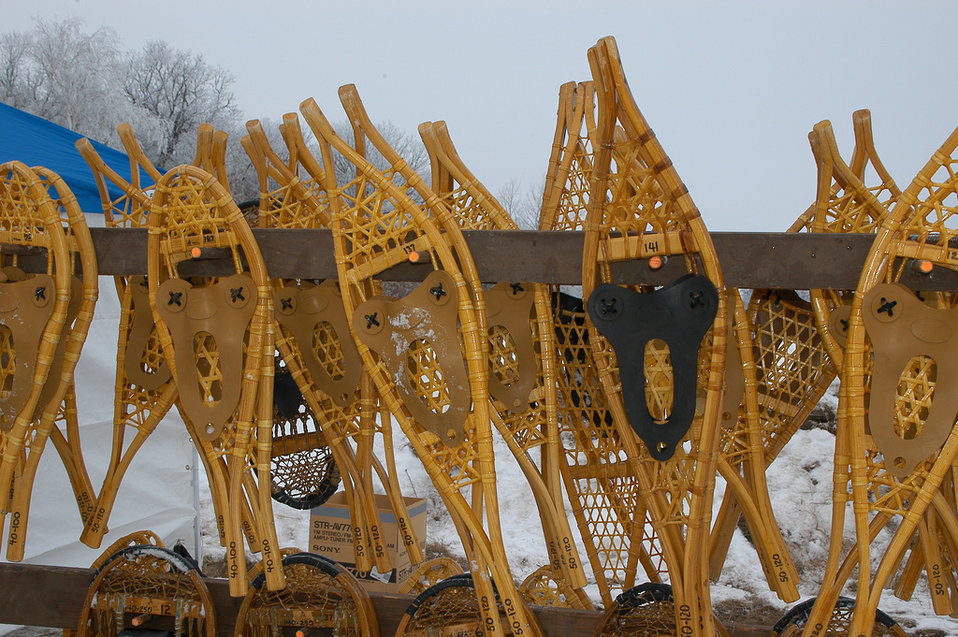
Snowshoes

At Sherburne Refuge's 2011 Winterfest.